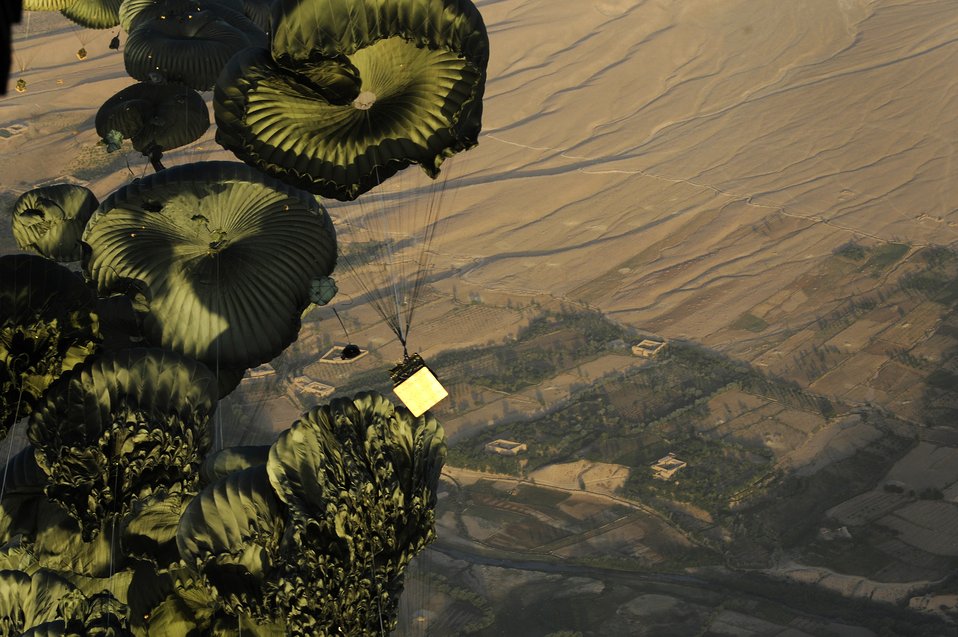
Relief is on the way

Pallets of cargo drop from a C-17 Globemaster III to a forward operating base in Afghanistan, Aug. 27, 2009, in support of Operation Enduring Freedom. The aircraft is assigned to the 817th Expeditionary Airlift Squadron at an air base in Southwest Asia.